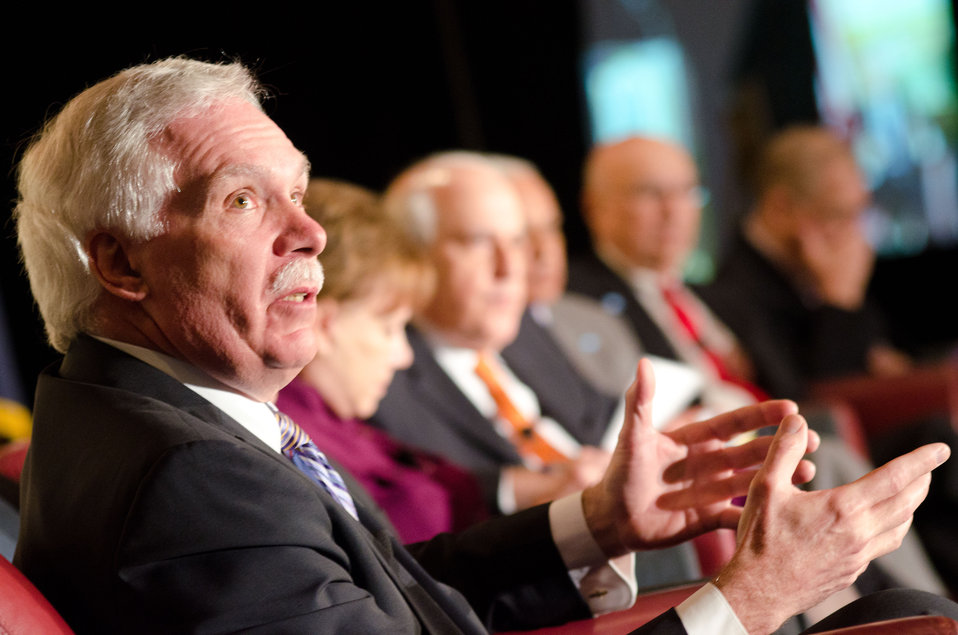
At the 2012 Agricultural Outlook Forum, “Moving Agriculture Forward” in Arlington, VA, held on Thursday, February 23, 2012, 7 former Secretaries of Agriculture sat on the plenary panel “Visions of the Future” hosted by current Agriculture Secretary Tom Vilsack. Governor Ed Schafer (ND) speaks out during the panel discussions.